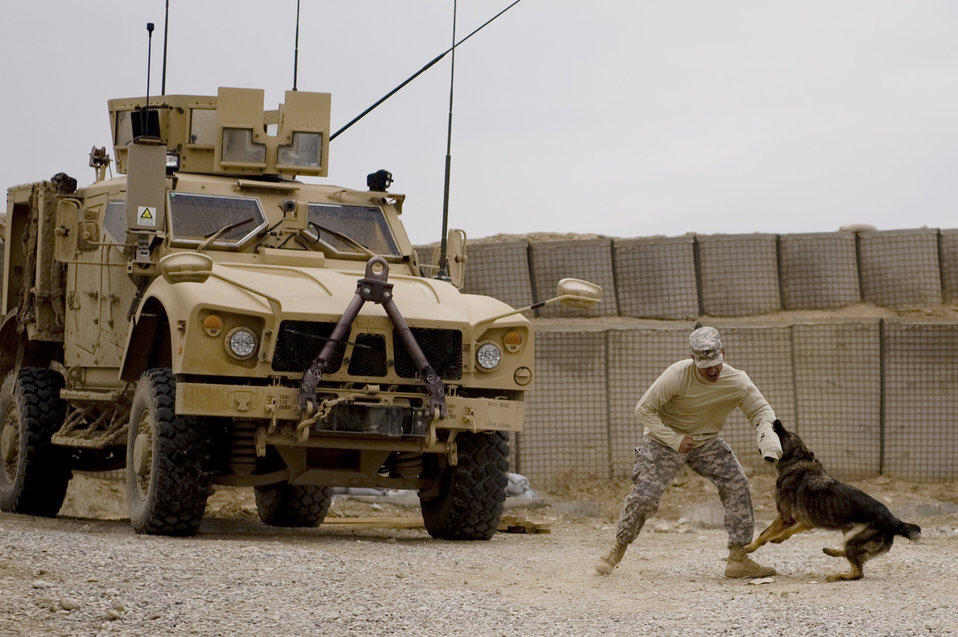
Combined Team Zabul

Army Spc. Joseph Lopez and Edy, a military working/patrol explosive detection dog, conduct a challenge drill Feb. 18, 2011, at Forward Operating Base Lagman, Afghanistan. Specialist Lopez is a member of Combined Team Zabul.